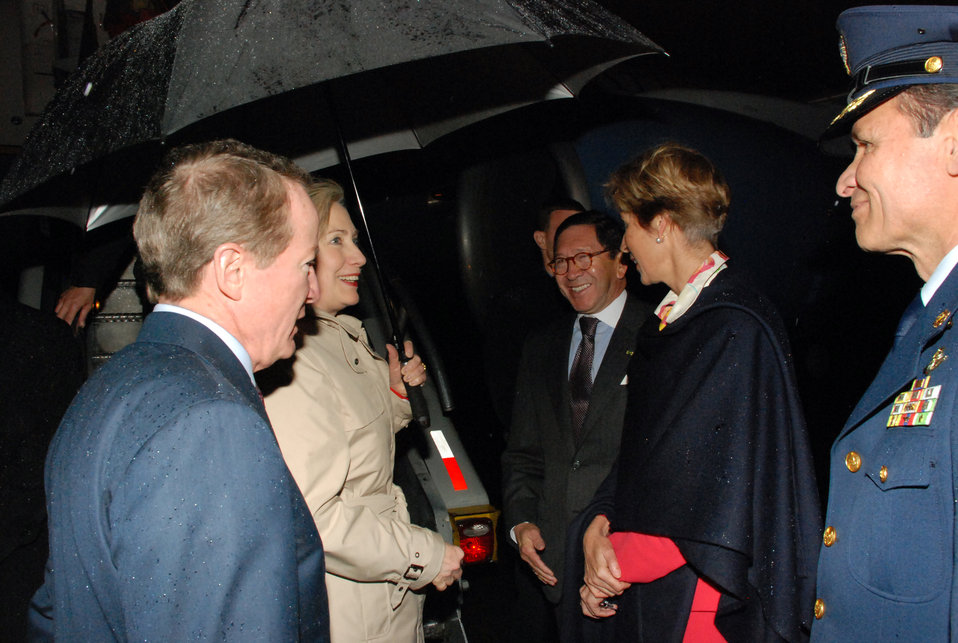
Secretary Clinton Arrives in Colombia

U.S. Secretary of State Hillary Rodham Clinton is accompanied by U.S. Ambassador to Colombia William R. Brownfield and Colombian Ambassador Carolina Barco as she arrives at CATAM airport in Bogotá Colombia June 8, 2010.